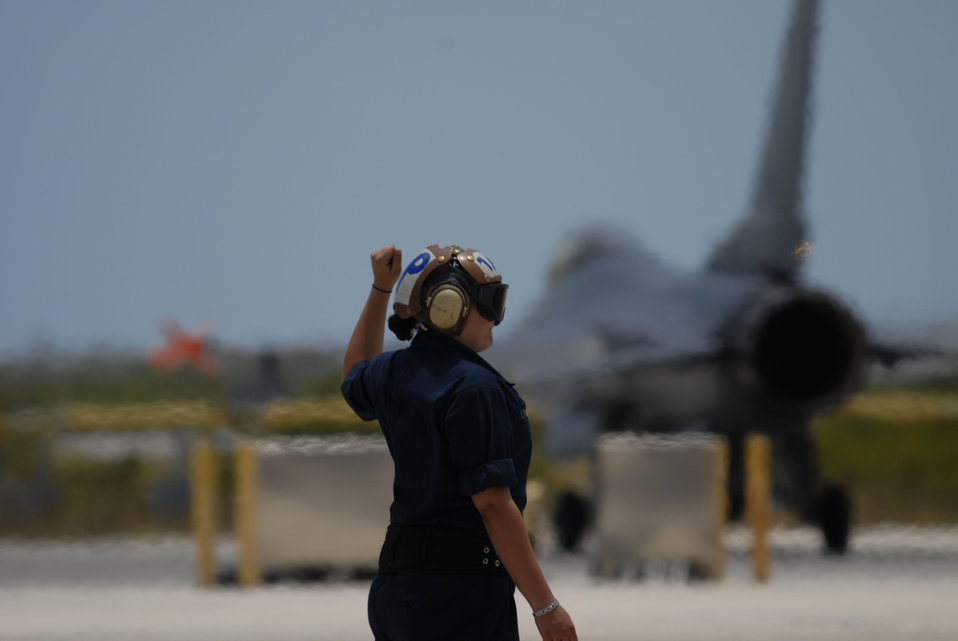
Air Guard, Navy train together

Seaman Samantha Lynch, an aviation machinist's mate with Strike Fighter Squadron 2, Naval Air Station Lemoore, Calif., worked alongside her Air Force counterparts from the Wisconsin Air National Guard's 115th Fighter Wing in Madison, during a two-week air-to-air combat skills training mission at NAS Key West, Fla. As part of the exercise, the aircraft maintainers participated in a swap program that had Air Guard maintainers helping to launch FA-18F Super Hornets and Navy maintainers doing the same with F-16C Fighting Falcons.